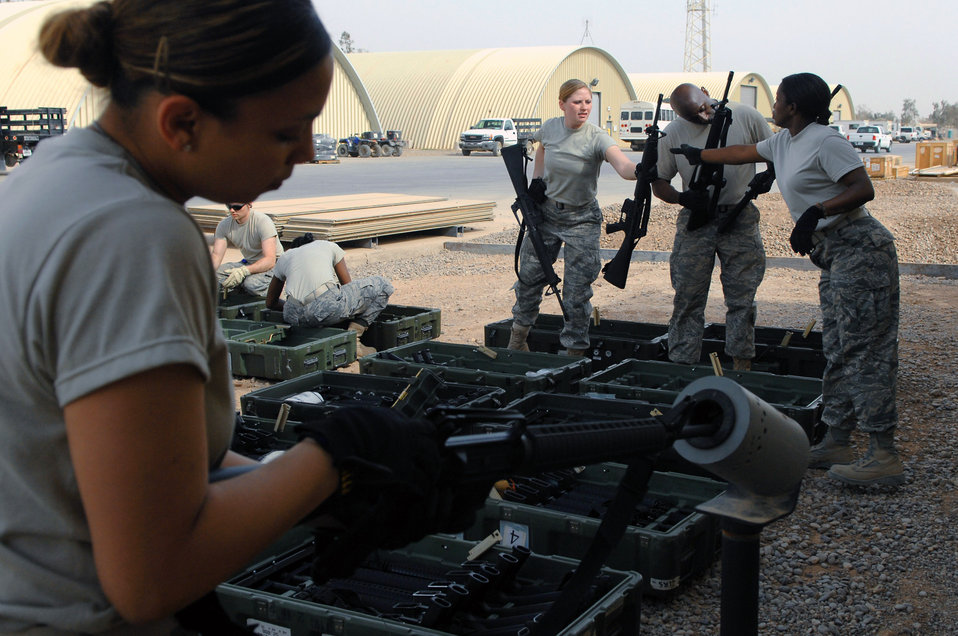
Prepositioning weapons at Balad to save $1.3 million

Airmen from the 332nd Expeditionary Logistics Readiness Squadron base supply shop check serial numbers and clear M-16 rifles before placing the weapons in the armory April 5 at Balad Air Base, Iraq. Balad AB has been chosen by Air Force leaders to be the test base for a weapons prepositioning initiative expected to save the Air Force approximately $1.3 million per year in transportation costs.